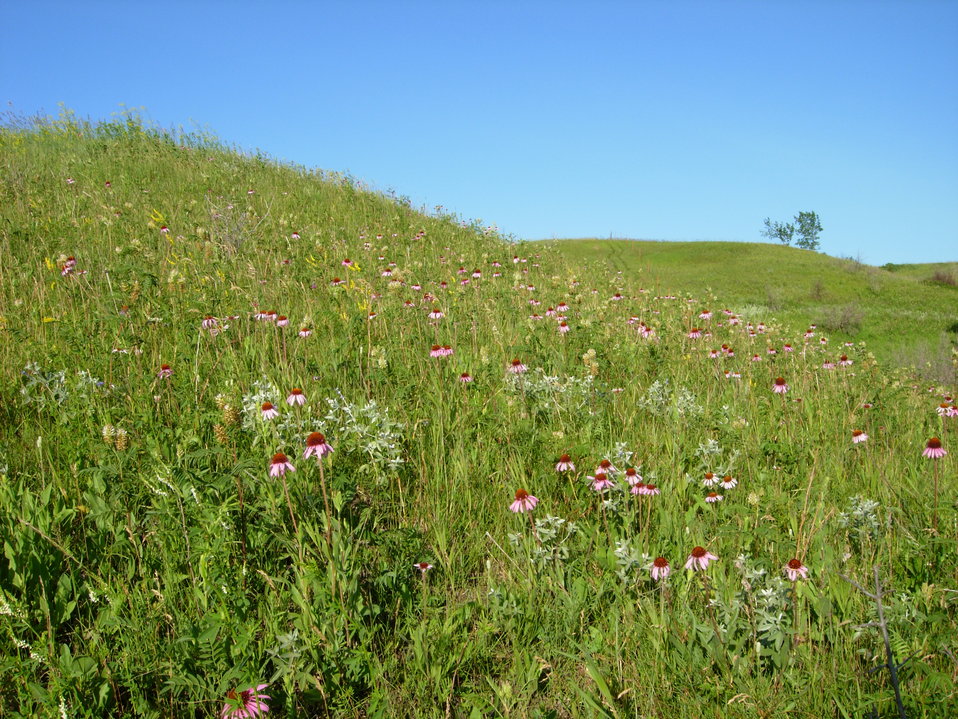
Hills of Coneflowers

Coneflowers at Upper Souris National Wildlife Refuge.